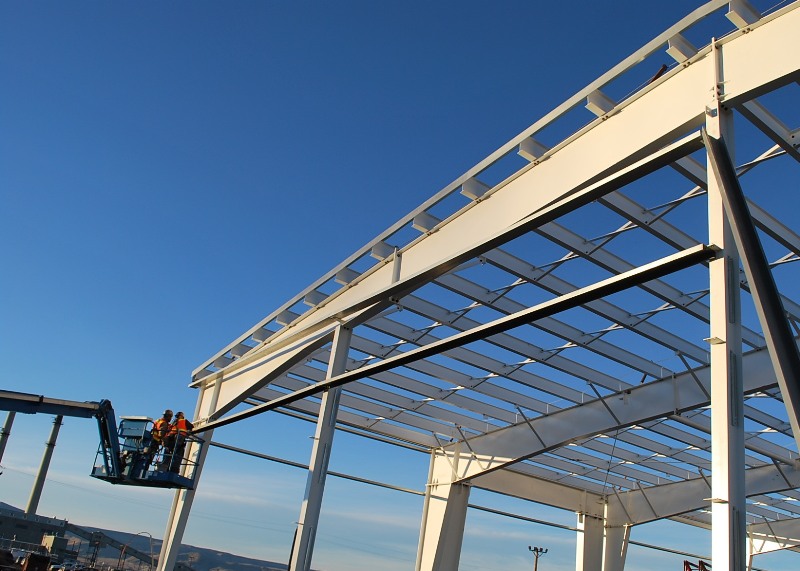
200W steel